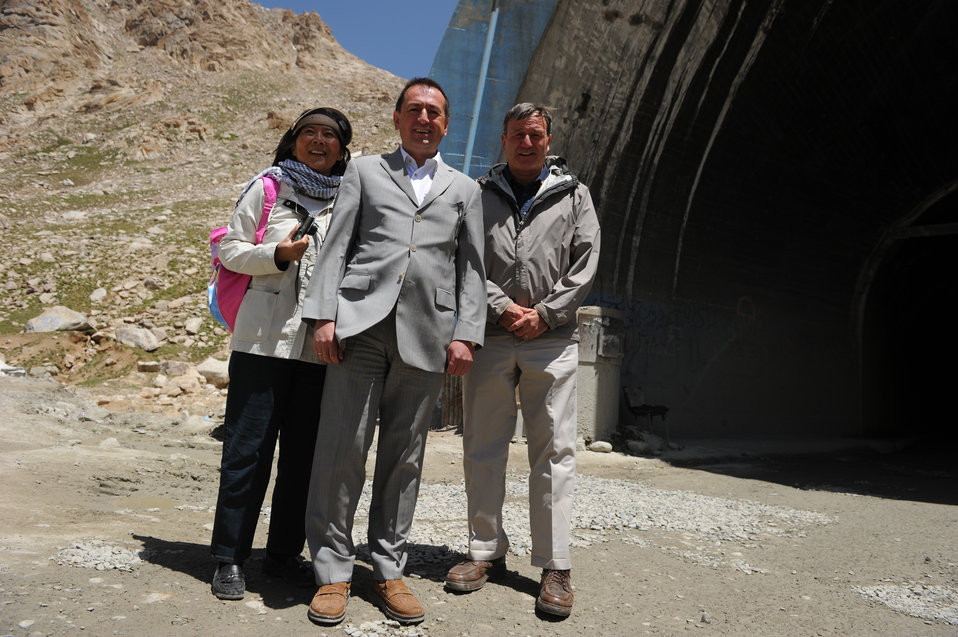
U.S. Ambassador Karl W. Eikenberry attends a ceremony to mark the beginning of renovations at the Salang Tunnel on the border of Parwan and Baghlan Provinces, Afghanistan, on Wednesday, June 15, 2011. (S.K.Vemmer/Department of State)